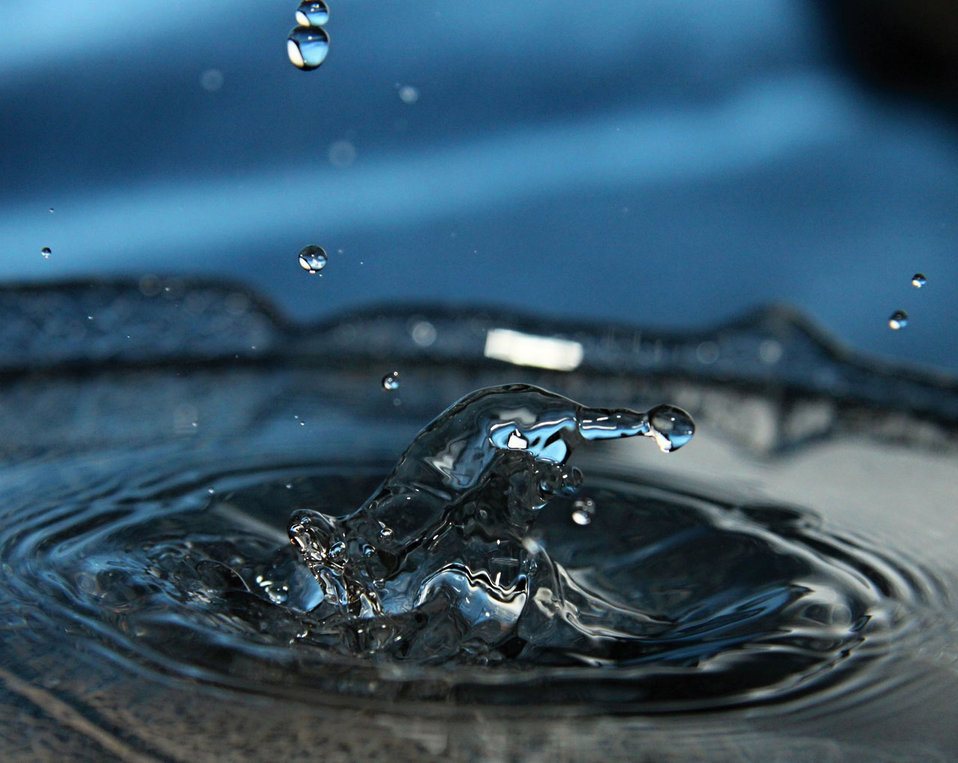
Play with water.